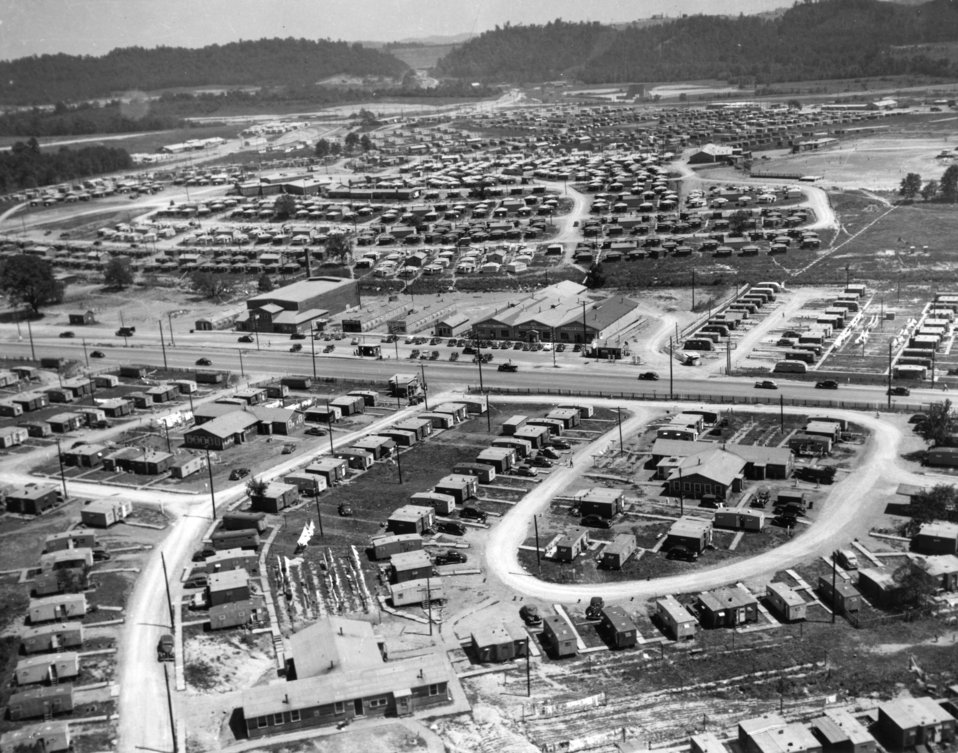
Aerial of Oak Ridge